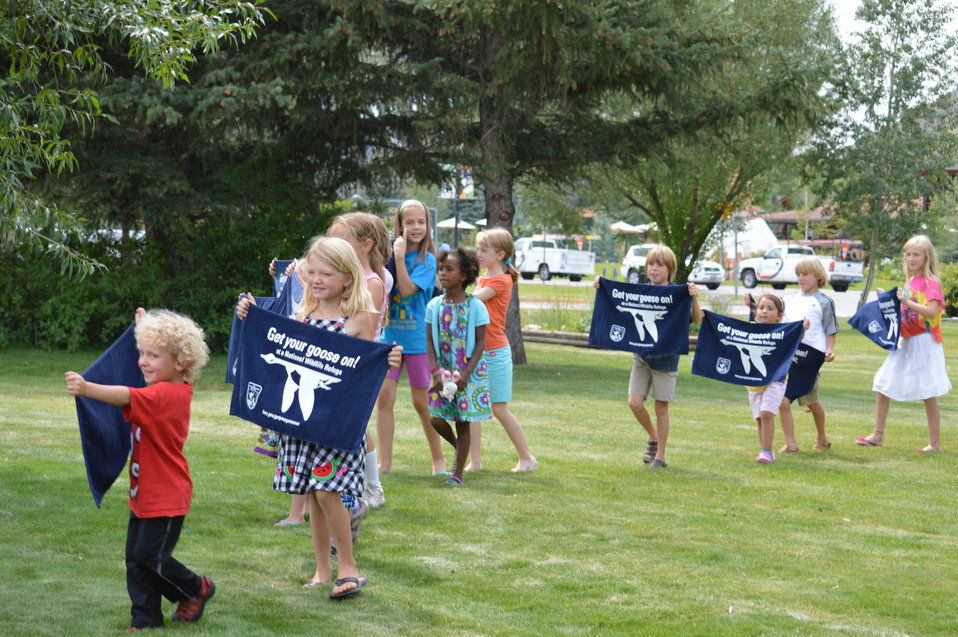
Get Your Goose On! - National Elk Refuge Style

On August 10, 2012 the U.S. Fish and Wildlife Service and Partners celebrated the 100 year anniversary of the establishment of the National Elk Refuge. In these photos, young attendees, along with Puddles the Blue Goose and the National Elk Refuge's mascot, showed us how to Get Your Goose On! with style.